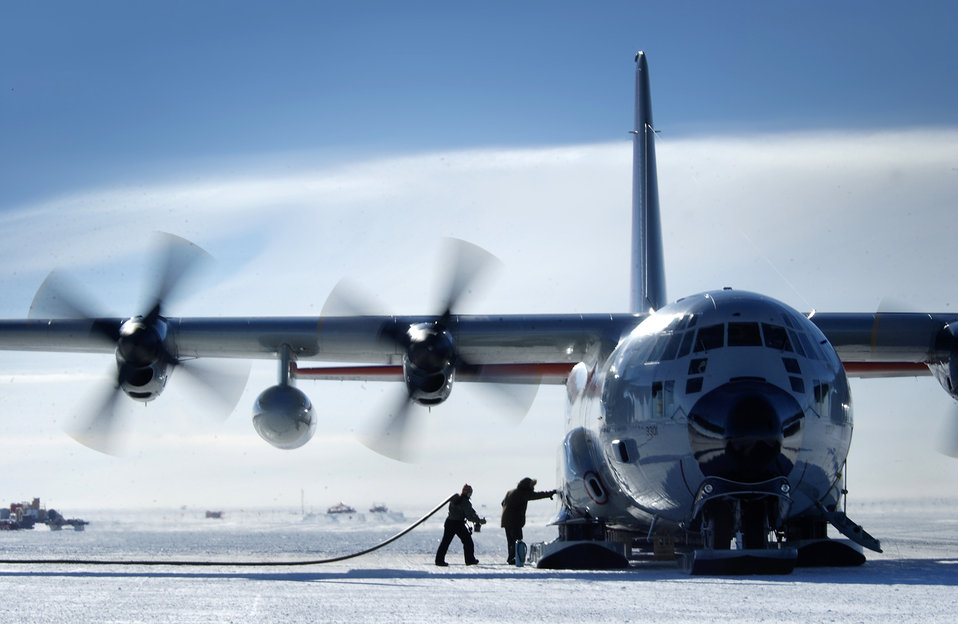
Operation Deep Freeze LC-130 arrives at Hickam

A New York Air National Guard LC-130 Hercules sits while crews unload fuel and cargo here during a mission to Antartica in 2005. A LC-130 arrived Oct. 17 at Hickam Air Force Base, Hawaii, en route to its first Operation Deep Freeze mission for the year. The LC-130 is equipped with ski-landing gear that allows the aircraft to land on ice or snow while airlifting supplies to remote locations throughout the Antarctic continent.